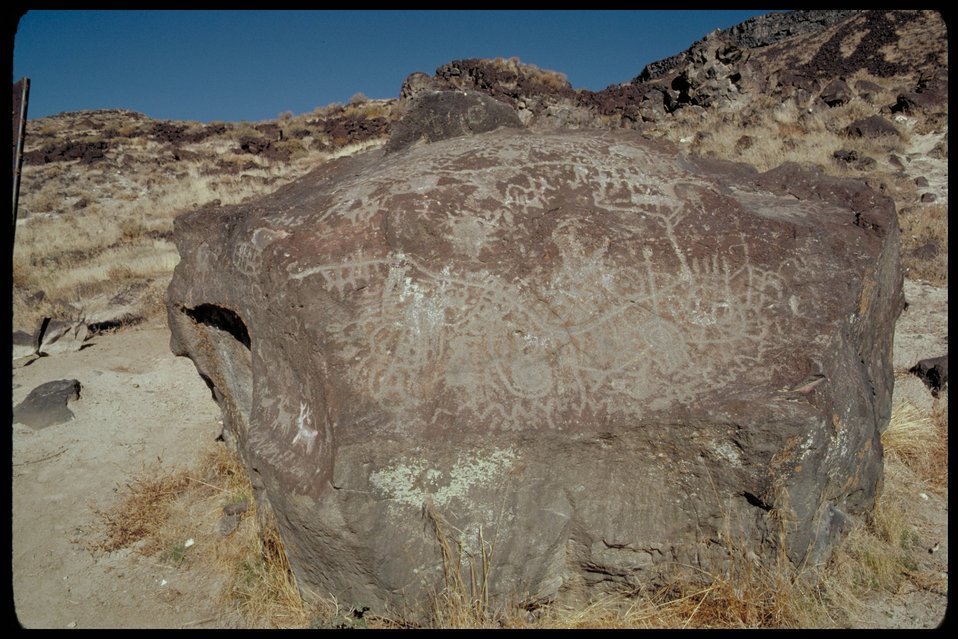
Petroglyphs in the Birds of Prey Conservation Area LSRD Snake River Canyon